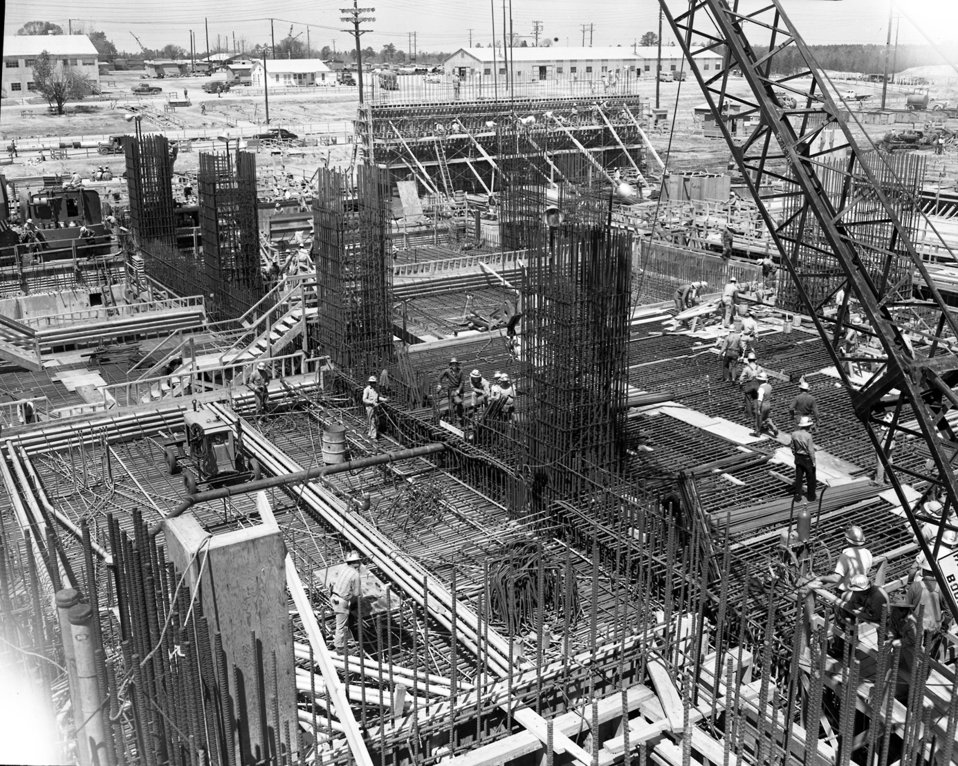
Historic P and R Reactor Photos - Savannah River Site

These photos from the 1950s show the construction of Savannah River Site’s P and R Reactors, as well as activities at the reactors once they became operational that decade. Each of the reactors, which formerly produced nuclear materials, occupies more than 300,000 square feet of space.